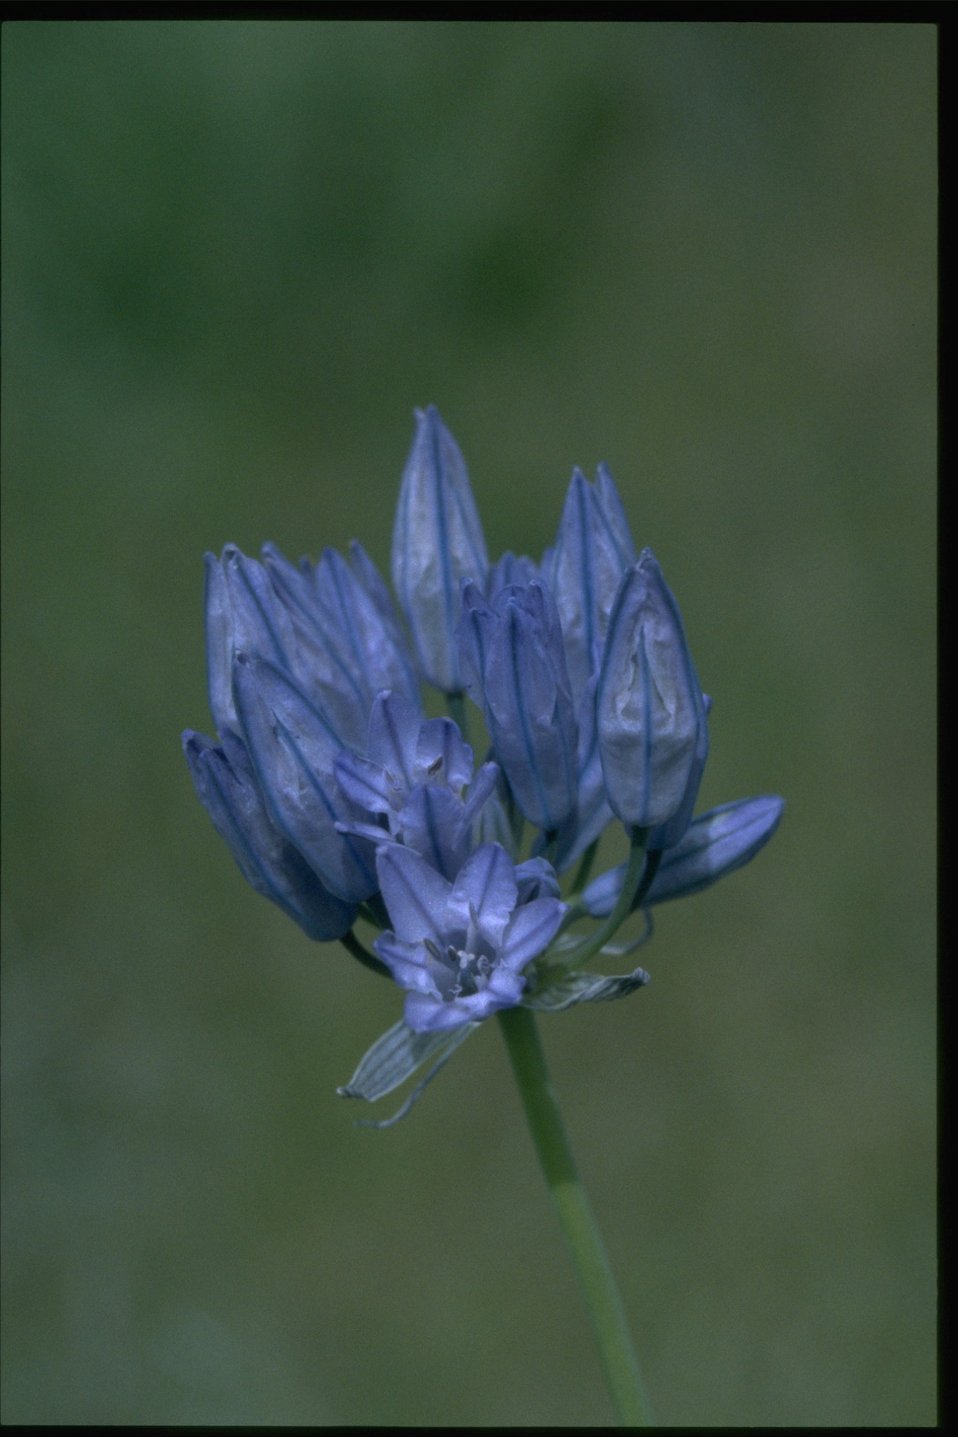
Closeup shot of Douglas' Triteleia wildflower.